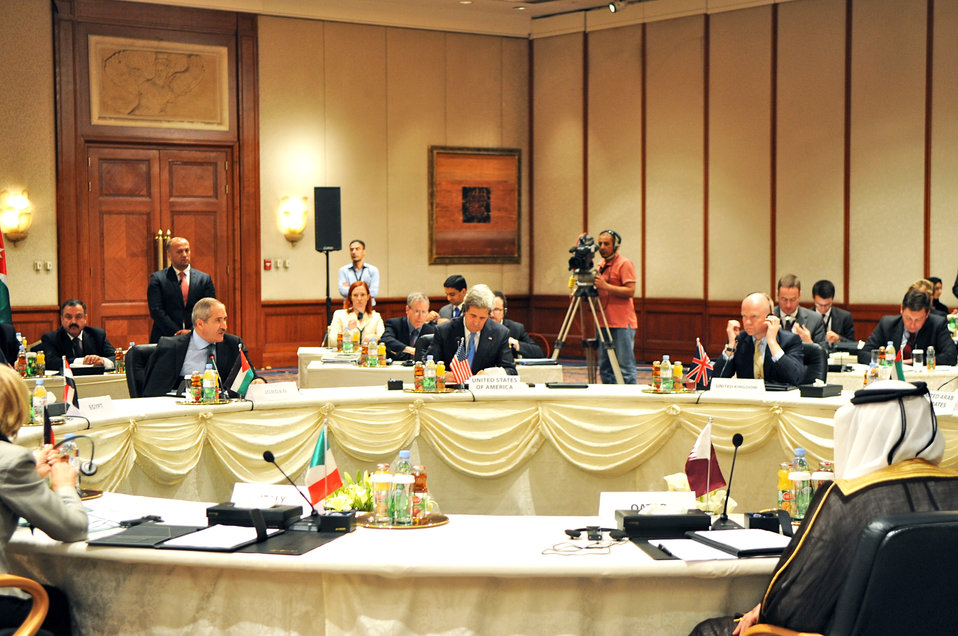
Secretary Kerry Participates in the Opening Session of the London Eleven Plenary

U.S. Secretary of State John Kerry participates in the opening session of the London Eleven Plenary in Amman, Jordan, on May 22, 2013. Also pictured are Jordanian Foreign Minister Judeh Nasser, seated on the Secretary's right, and British Foreign Secretary William Hague, seated on the Secretary's left.